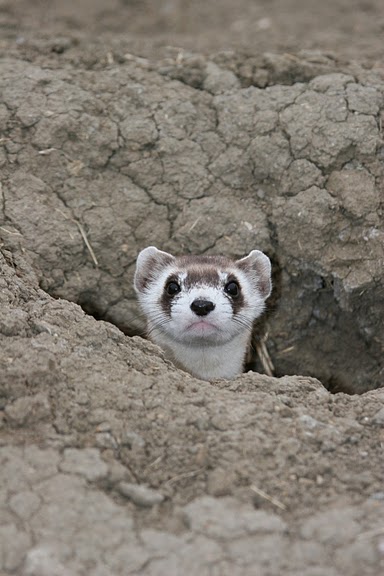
Black-footed Ferret